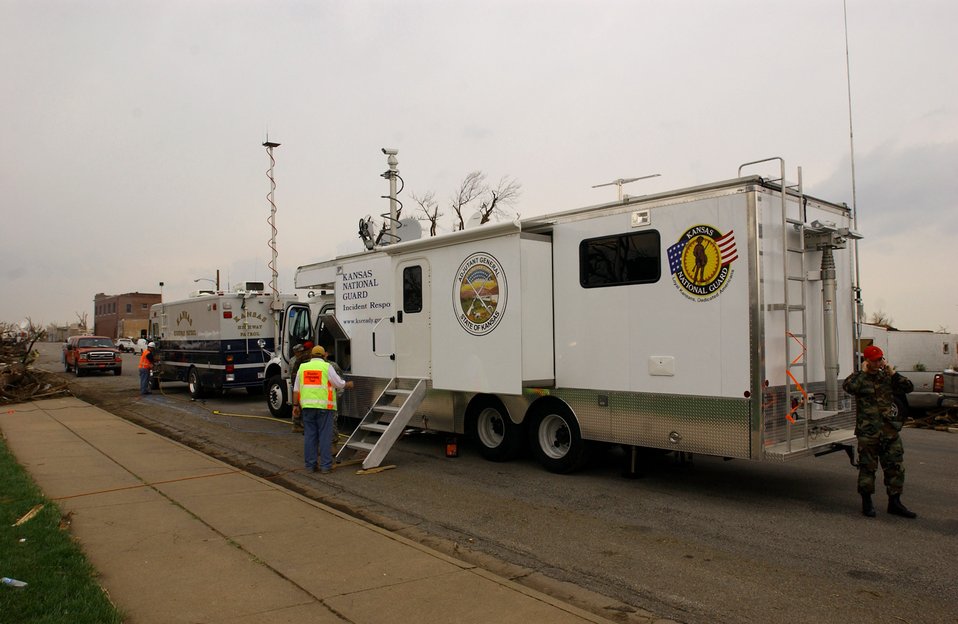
National Guard cleaning up devastated Kansas town

Kansas National Guardsmen brought their newest command and control center, called the C2V, to the town of Greensburg, Kan., where a devastating tornado demolished more than 90 percent of the town. This rolling communication center allowed the Guardsmen to coordinate timely assistance from locations throughout the state.